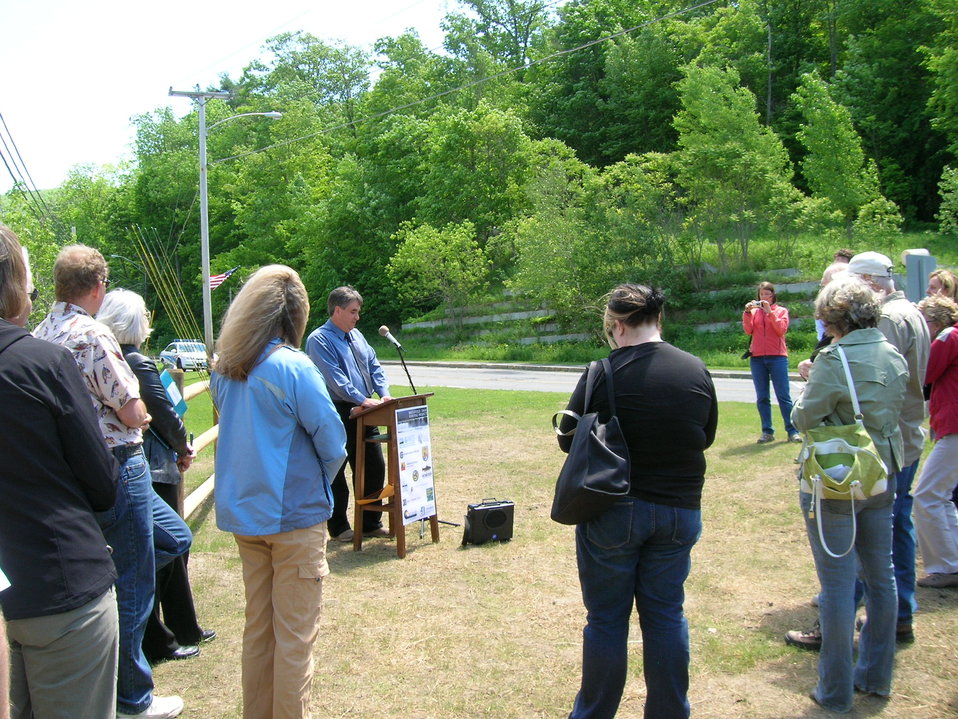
Briggsville Dam Removal Celebration